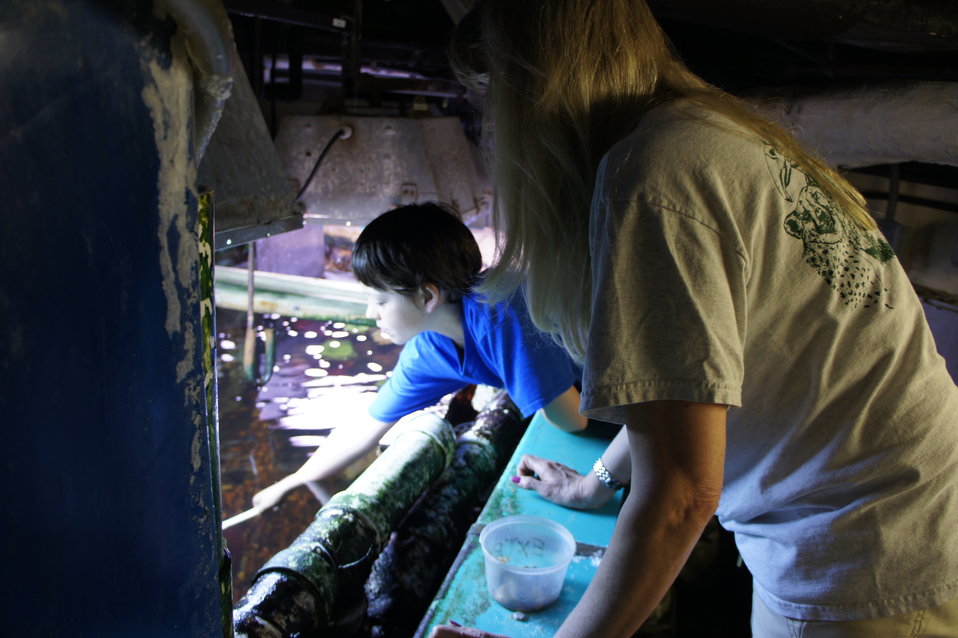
'Save the Nautilus' co-founder visits Smithsonian National Zoo

Josiah Utsch, co-founder of www.savethenautilus.com, feeds a giant Pacific octopus at the Smithsonian National Zoo.